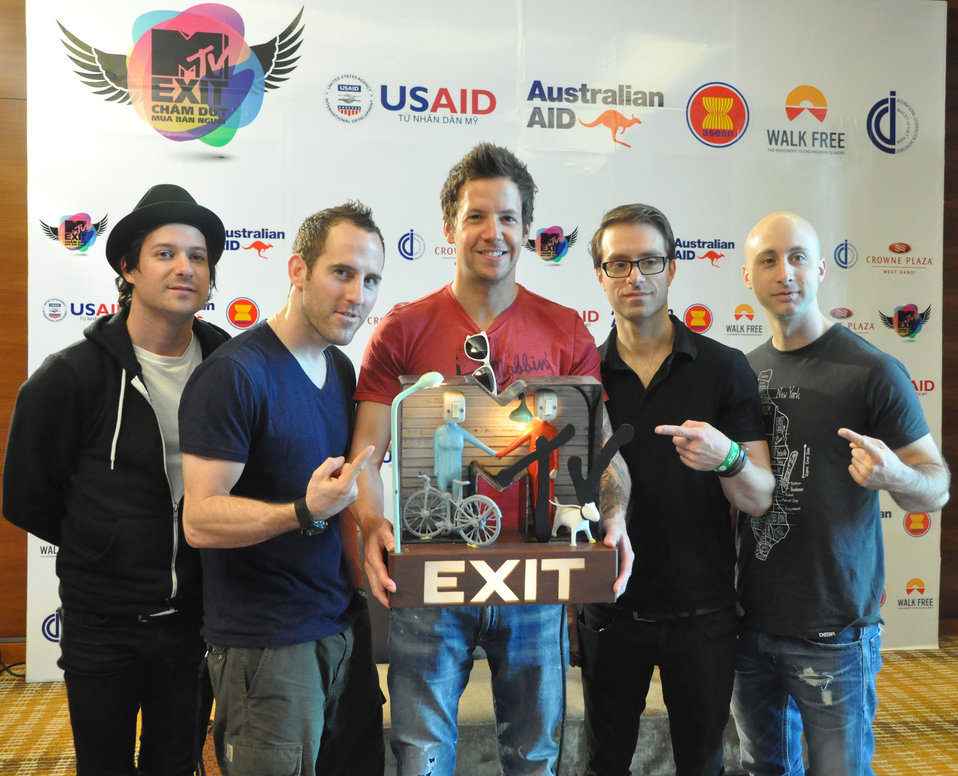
Simple Plan Meets the Press in Hanoi on May 27, 2012